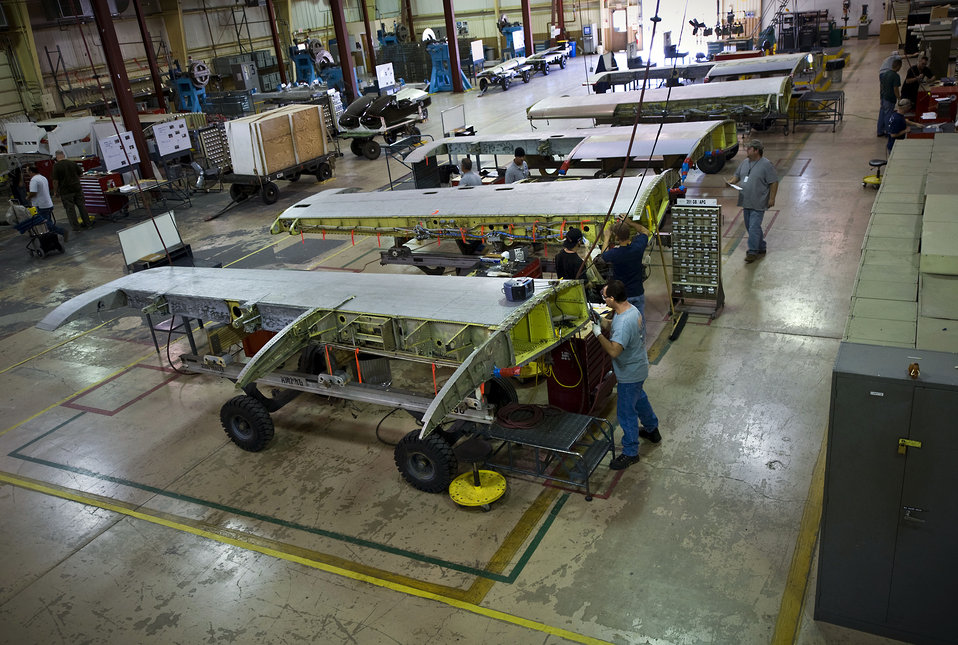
A-10 Hog Up

Aircraft mechanics with the 309th Aerospace Maintenance and Regeneration Group at Davis-Monthan Air Force Base, Ariz., work on upgrades to the wings of A-10 Thunderbolt IIs Dec. 17, 2009. A-10s are undergoing a wing strengthening modification, affectionately called the